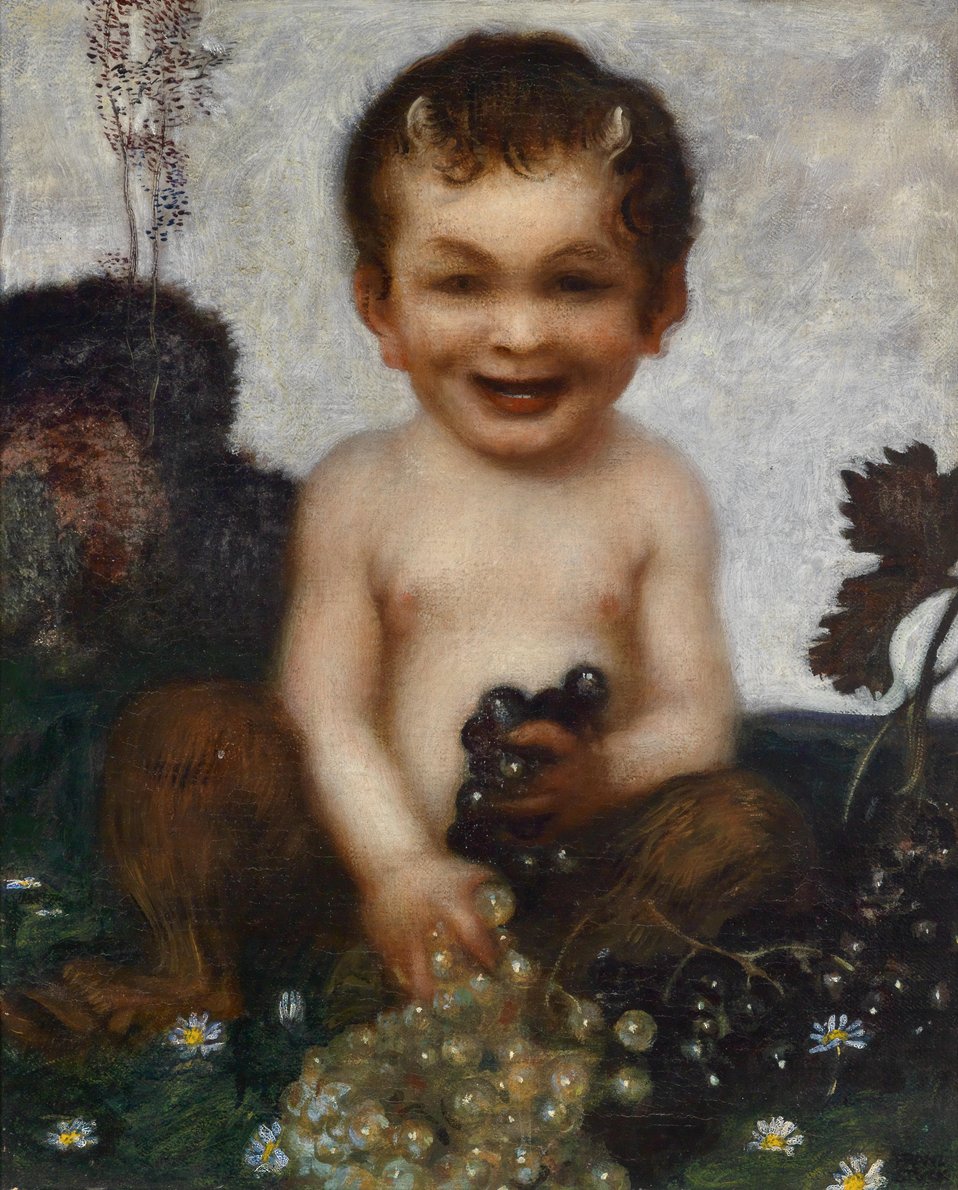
Junger Faun, 1902, signiert Franz Stuck, Öl auf Leinwand, 56,5 x 46 cm